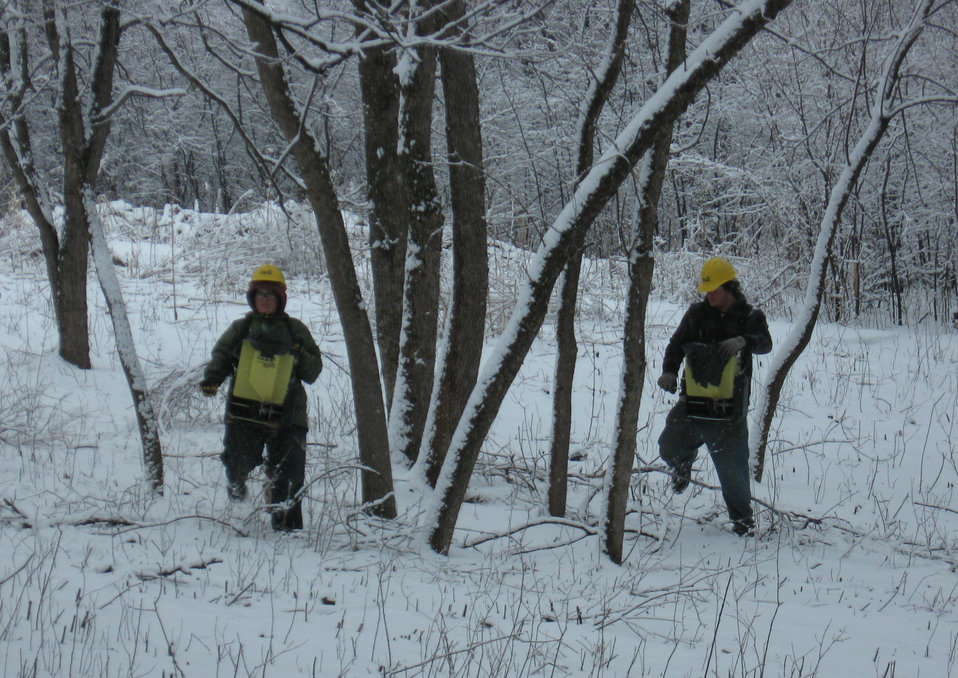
Snow Doesn't Stop Us

The final crew found themselves working in snow in mid-April.